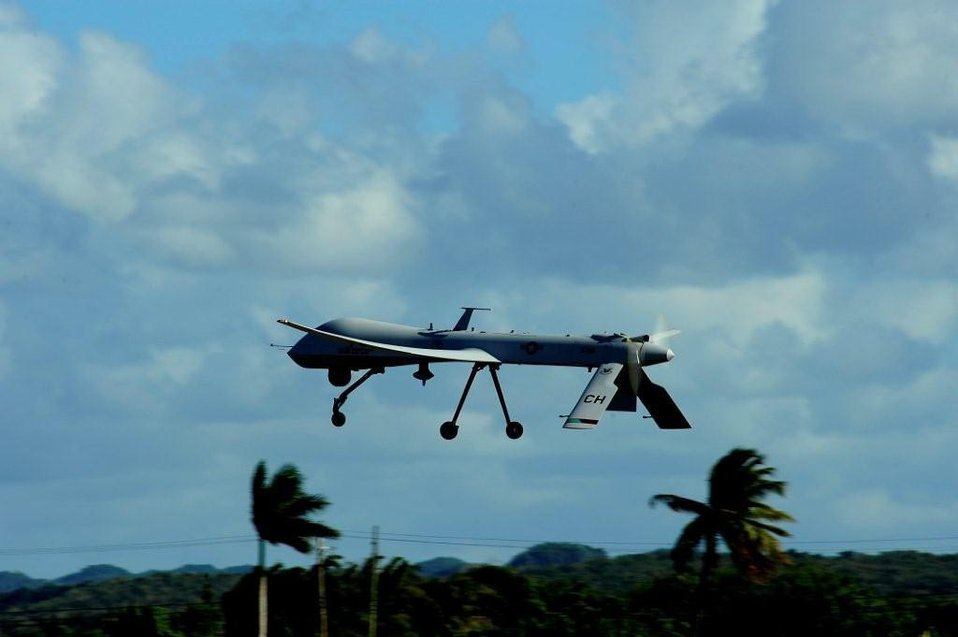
Eye in the sky

An RQ-1 Predator approaches the runway Jan. 27, 2010, at Aguadilla, Puerto Rico. Approximately 50 Airmen from the 432nd Wing and 432nd Air Expeditionary Wing deployed in support of Operation Unified Response.